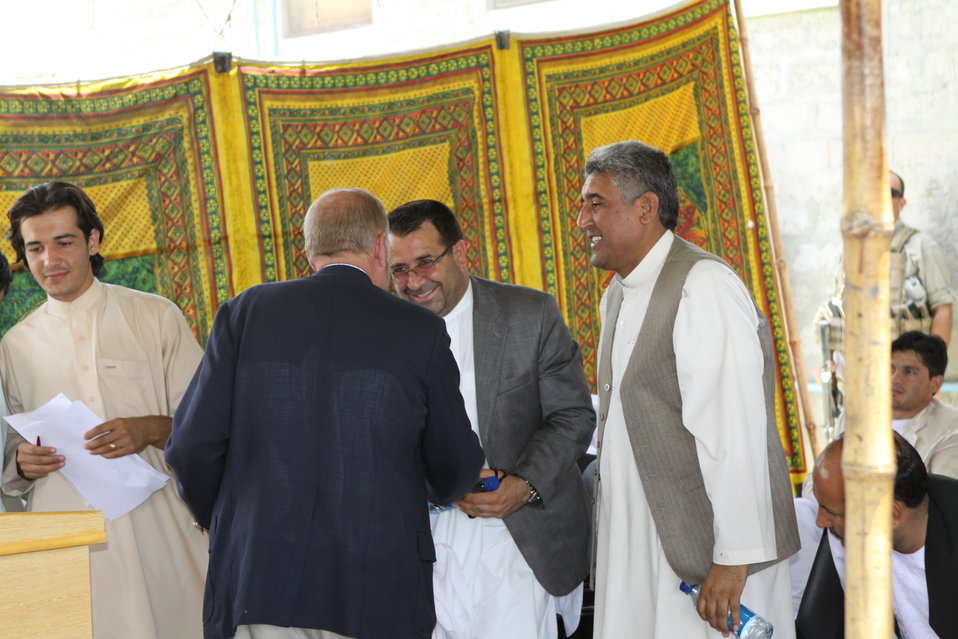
Bolan Poultry Farm